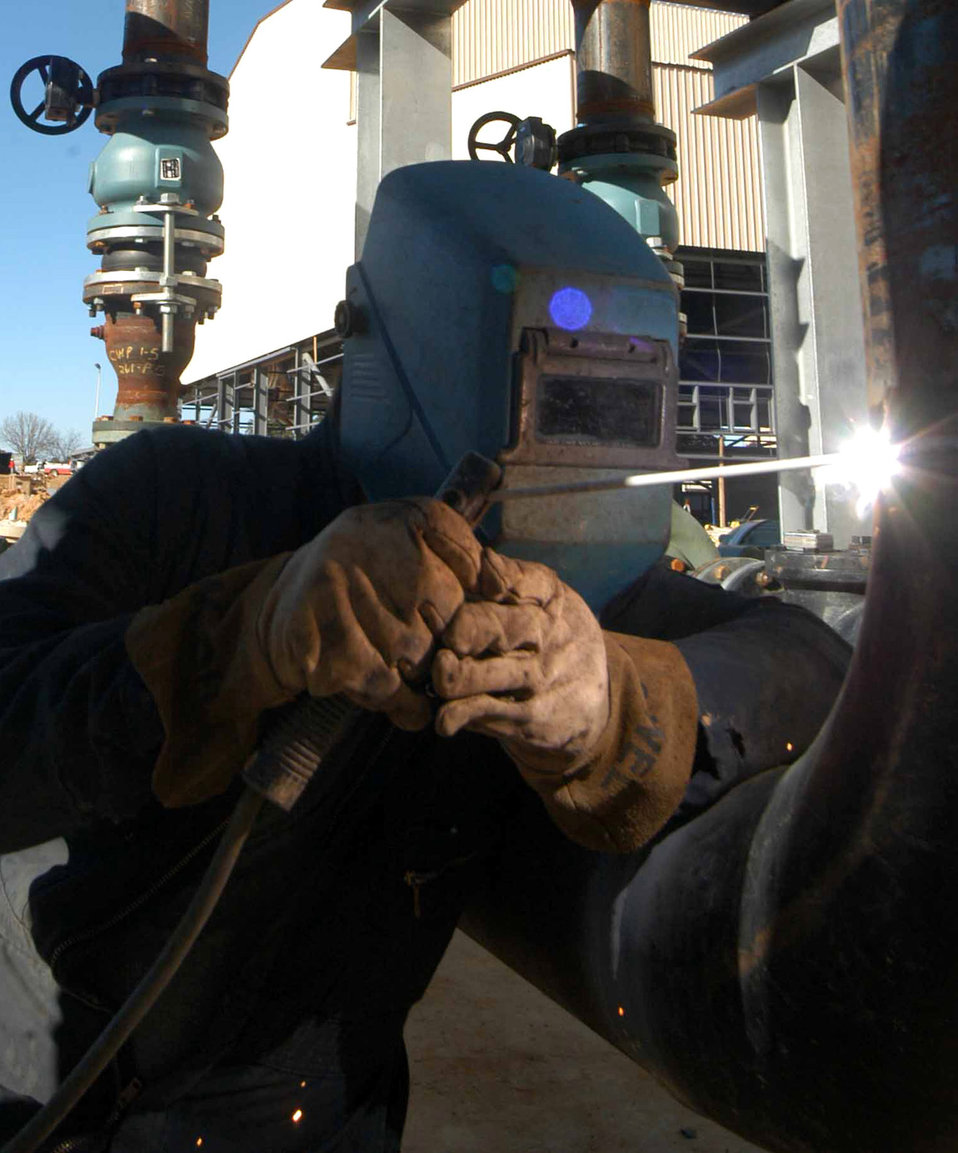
Building for the environment

ROBINS AIR FORCE BASE, Ga. (AFPN) -- Dean Hummel welds a cooling unit at the new corrosion control paint and depaint facility now under construction. The facility is scheduled to be completed in March 2007.